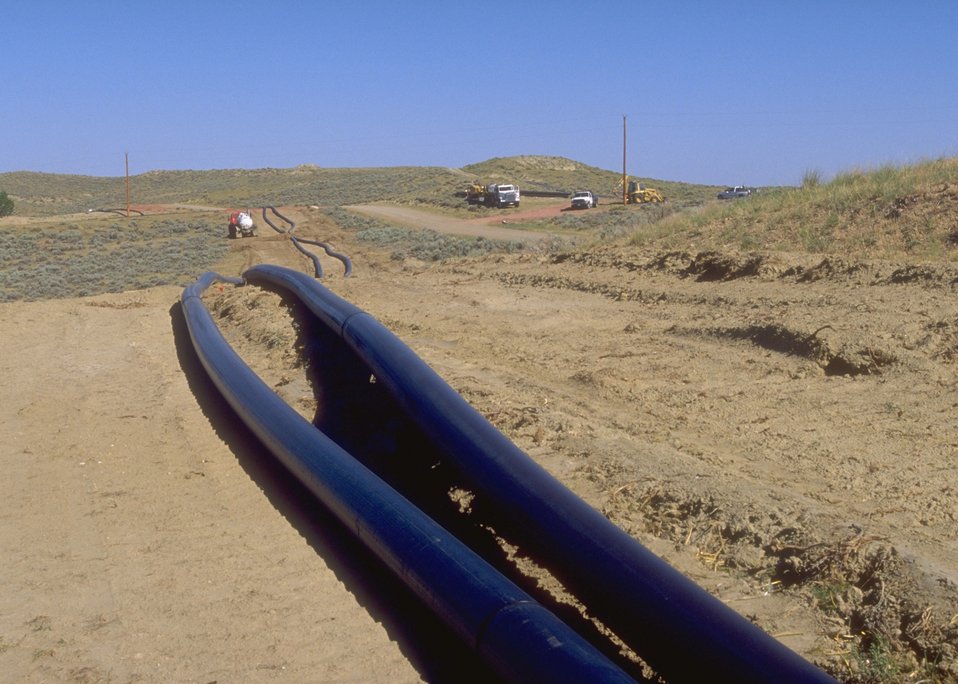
Construction for coal bed methane development, Buffalo Field Office.